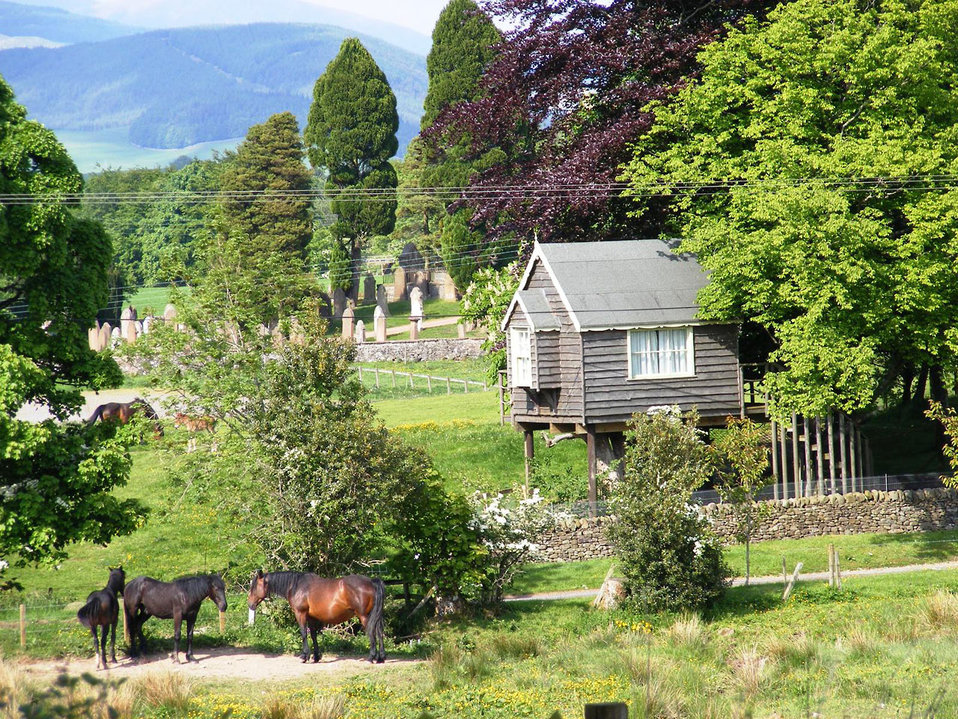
Tree house and surroundings.